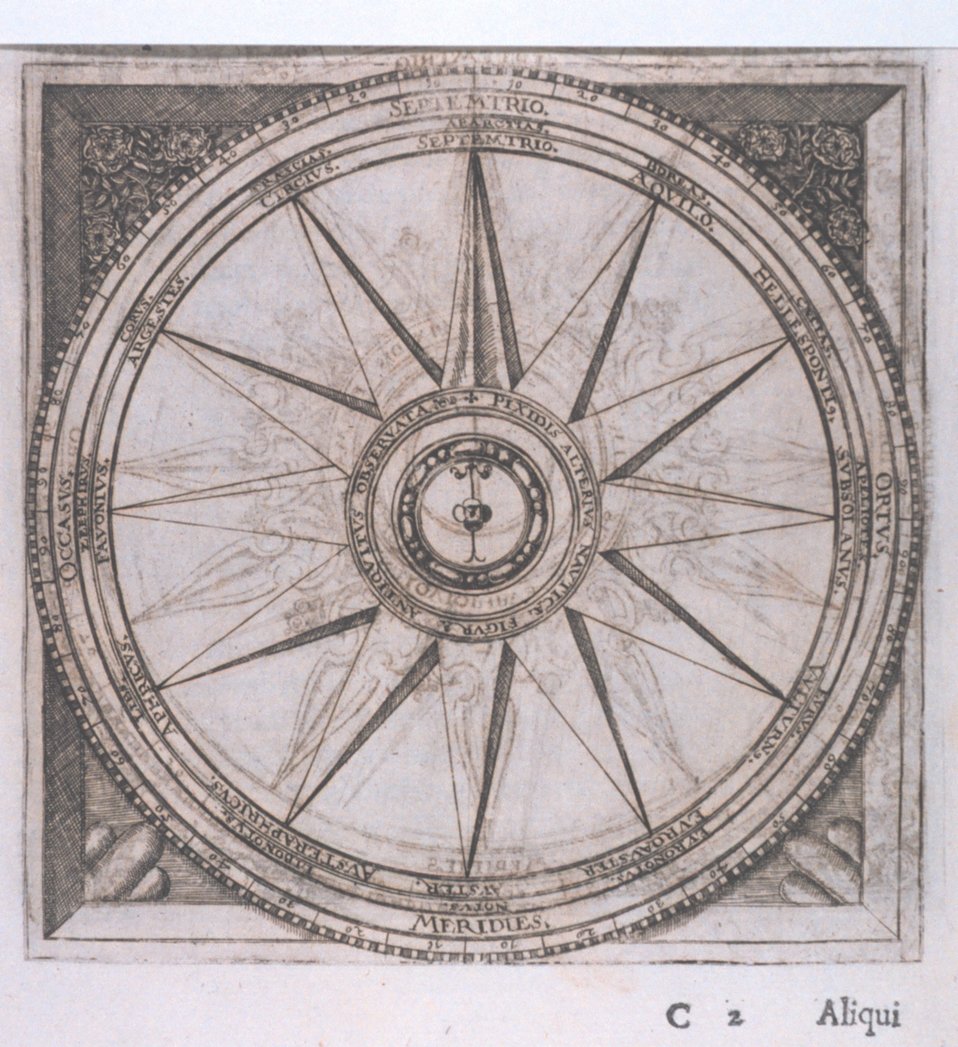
Image #3 of sequence - A decorative wind rose in: Philosophi ac medici.... by Fabrizio Padovani, 1601. P. 19. Call Number QC931.P32 1601